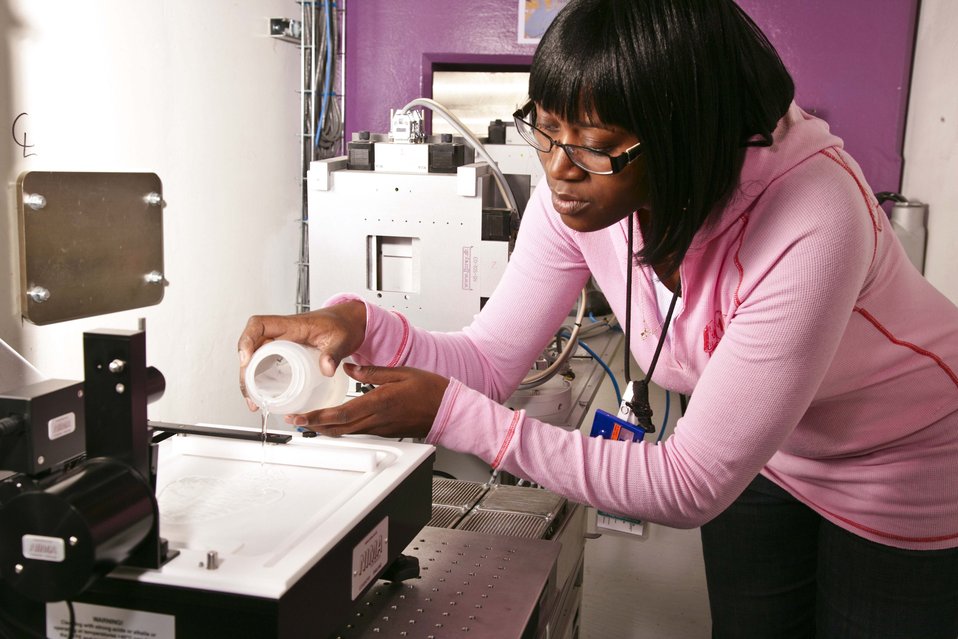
Researcher in Oak Ridge